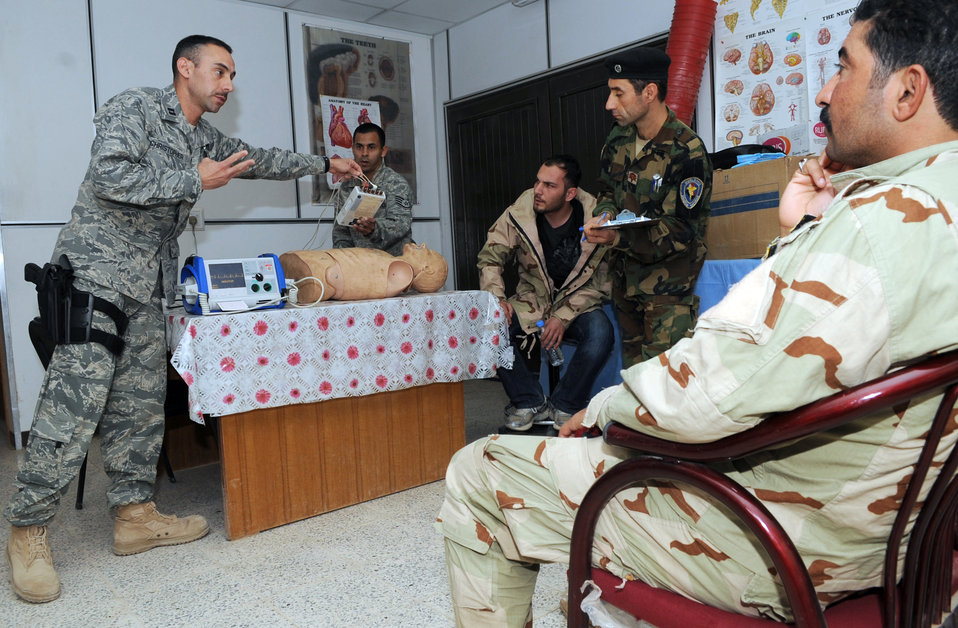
Kirkuk Airmen train Iraqi medics

Capt. Adam Christopher and Staff Sgt. Andrew Salas teach Iraqi medics how to use a defibrillator Feb. 16, 2010, at Kirkuk Air Base, Iraq. This training is part of the Expert Field Medical Batch four-week course offered to Iraqi medics at the K-1 Iraqi medical clinic in order to provide the experience they will need in real-world situations. Captain Christopher and Sergeant Salas are assigned to the 506th Expeditionary Medical Squadron.